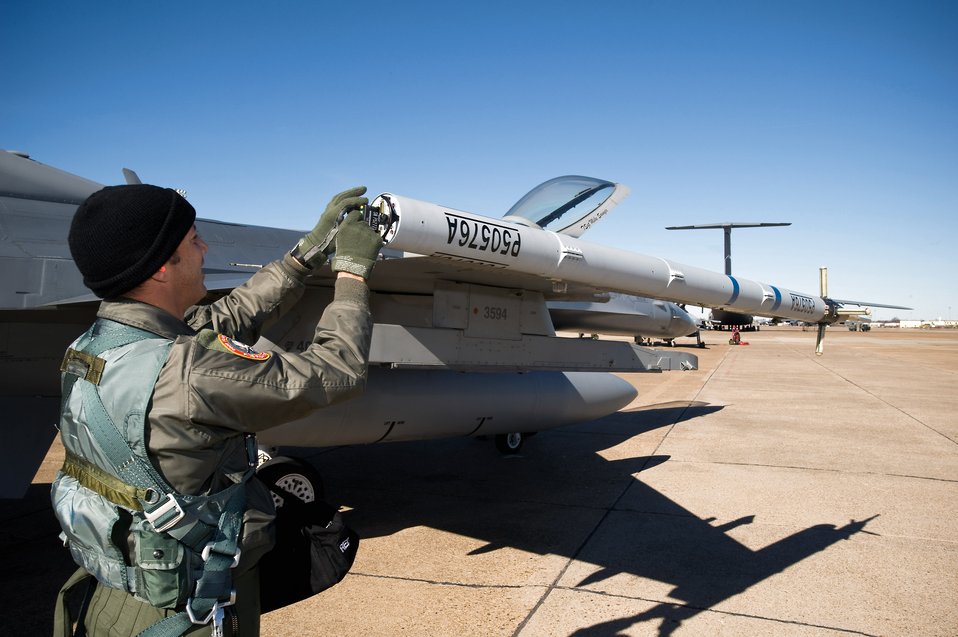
Swap out

Lt. Col. Mitch Neff loads a data recording device into the air combat maneuvering instrumentation pod on an F-16 Fighting Falcon Dec. 4 at Green Flag East at Barksdale Air Force Base, La. The ACMI pods are being used on the F-16s to provide real-time 3-D flight data to the battlefield commander. Colonel Neff is a Colorado Air National Guard pilot with the 120th Fighter Squadron from Buckley AFB, Colo.